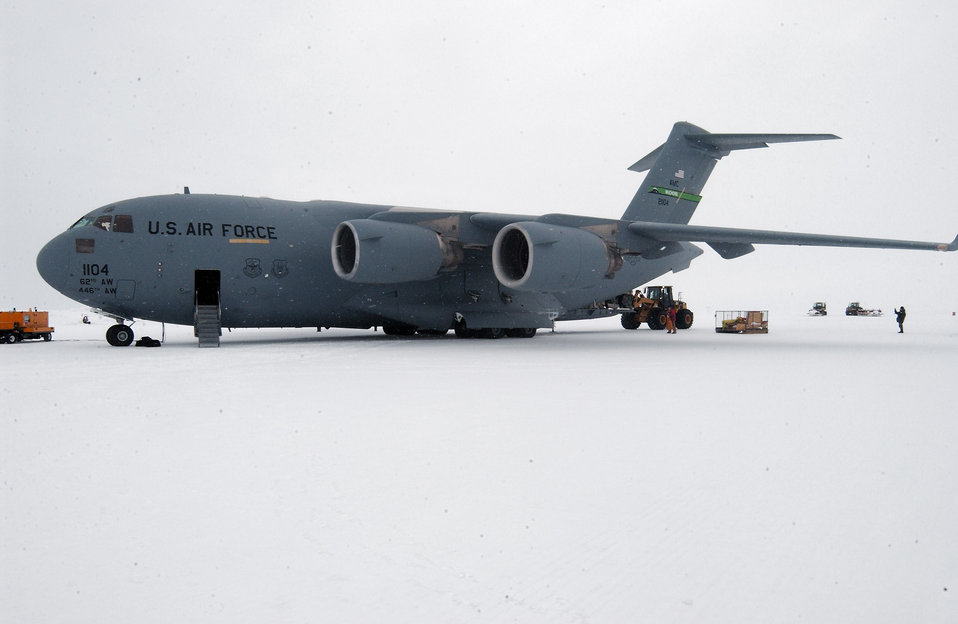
McChord Airmen fuel Operation Deep Freeze

A C-17 Globemaster III sits on the Pegasus ice runway Dec. 1 near McMurdo Station, Antarctica. The C-17 is from McChord Air Force Base, Wash.